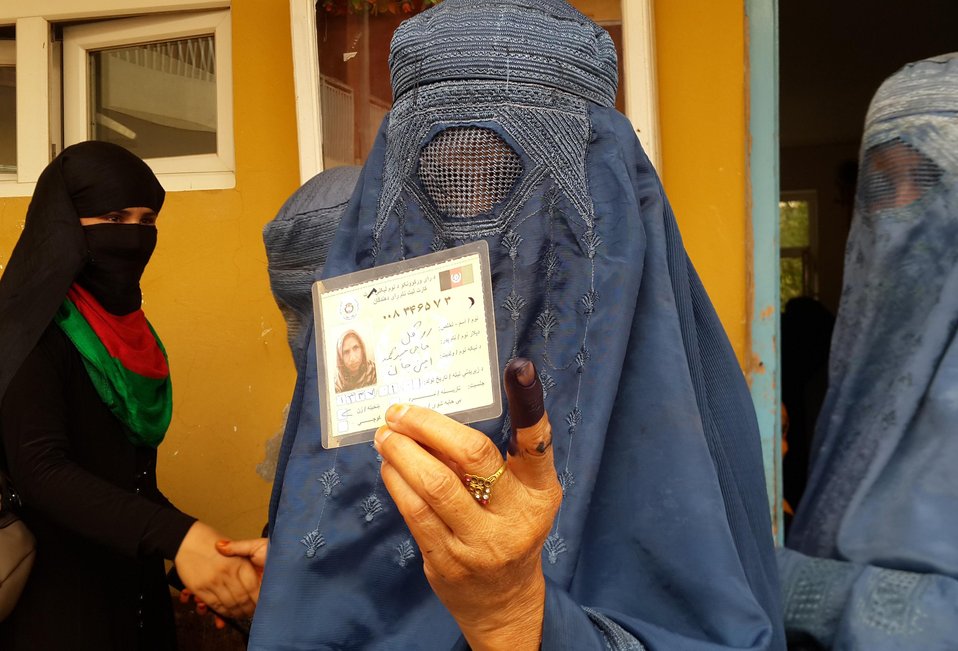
A burqa-clad woman shows her inked finger and voting card after casting her vote in Afghanistan’s northern Kunduz province.